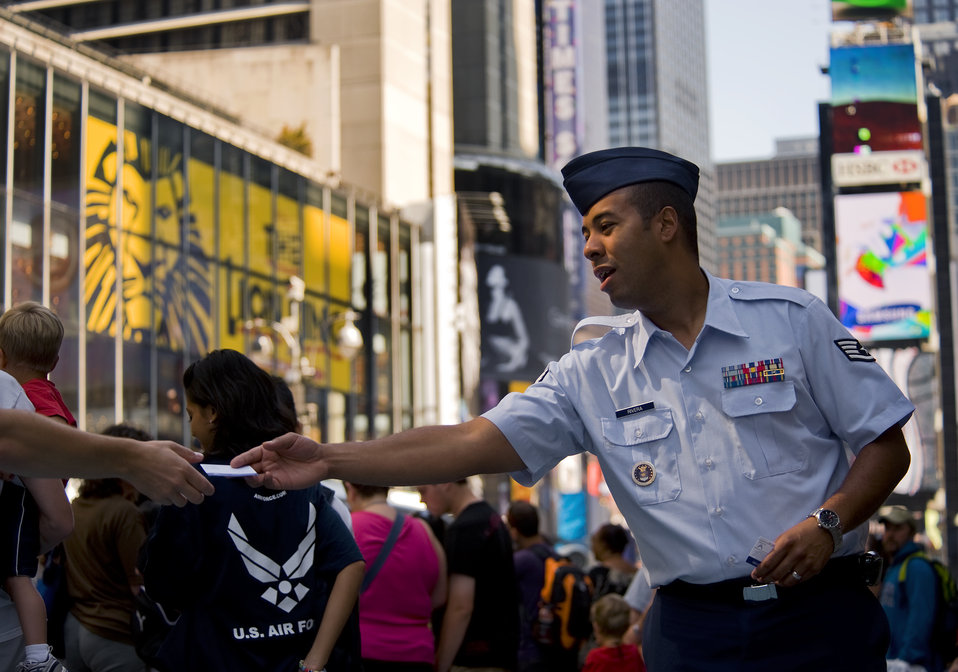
Air Force Week New York

Staff Sgt. Bryan Rivera passes out his business cards to potential recruits during festivities for Air Force Week New York Aug. 26, 2010, in New York's Times Square. Sergeant Rivera is an Air Force recruiter in New York.